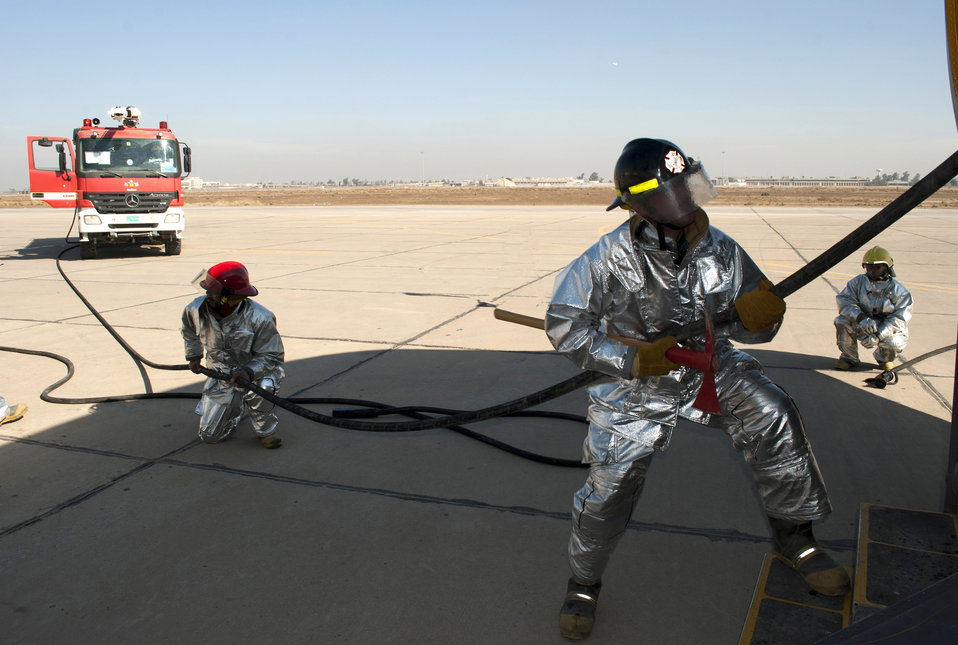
Advisers fight fire with knowledge

Iraqi air force firefighters feed hose to the interior crews fighting a simulated cargo fire on a C-130 Hercules Jan. 24, 2011, at New Al-Muthana Air Base, Iraq. The training was geared toward expanding Iraqi air force firefighter knowledge and response capabilities.